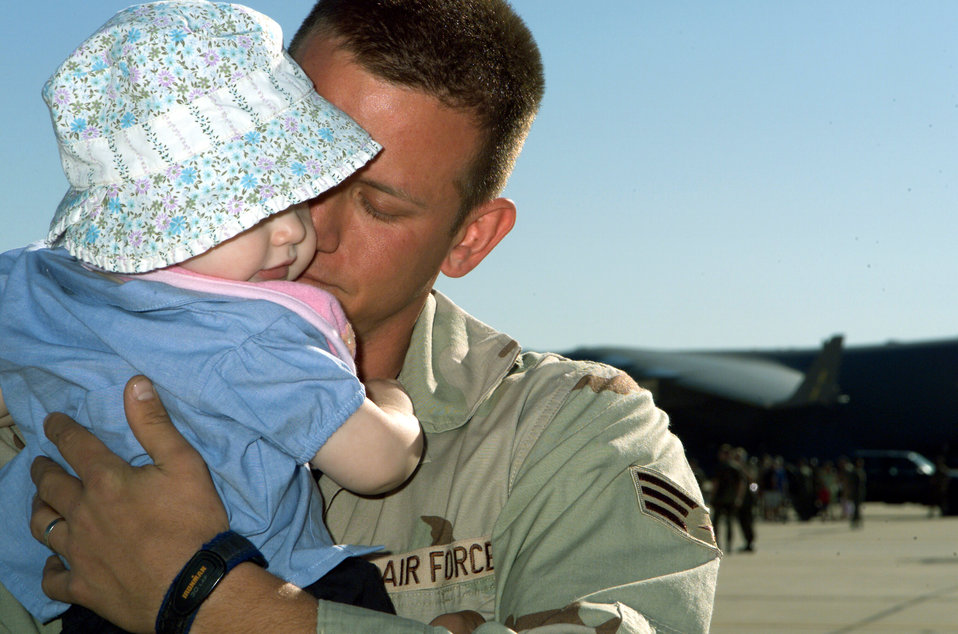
Back home again

DAVIS-MONTHAN AIR FORCE BASE, Ariz. -- Senior Airman Aaron Fenton hugs his daughter, McKenzie, for the first time after a four-month deployment to Iraq. Airman Fenton is assigned to the 355th Maintenance Group here. He returned home March 16.